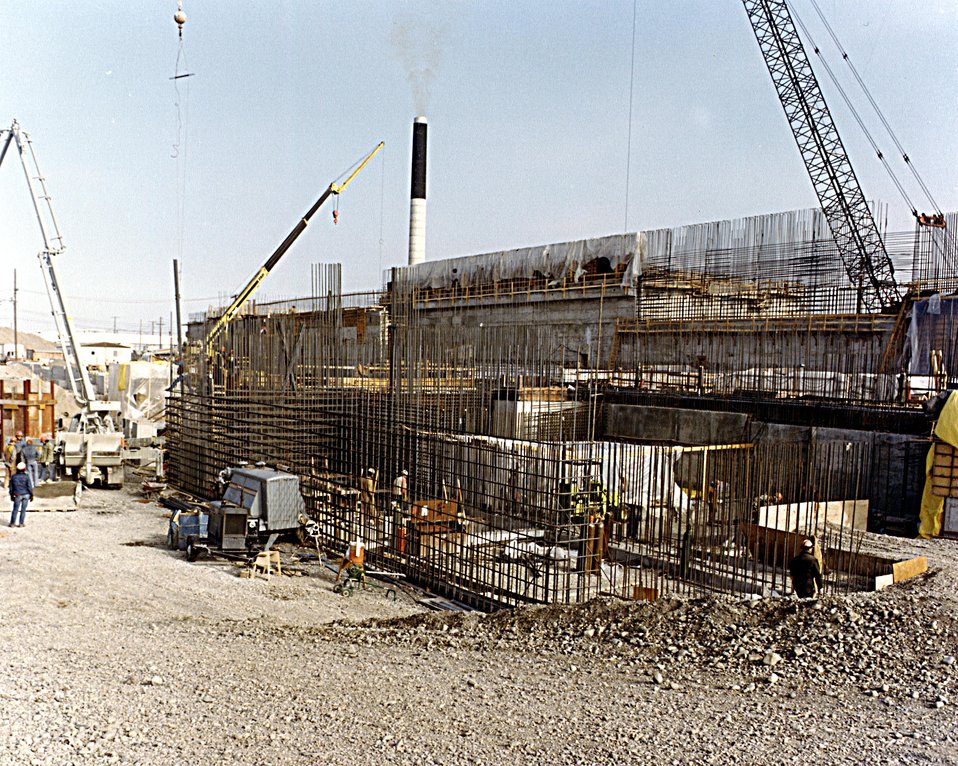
THE FLUORINEL FACILITY DURING CONSTRUCTION.

THE FLUORINEL FACILITY WILL INCLUDE AREAS FOR THE RECEIPT, HANDLING, STORAGE, AND DISSOLUTION OF SPENT REACTOR FUEL. THE DISSOLVED SOLUTION WILL BE TRANSFERRED TO EXISTING FACILITIES AT THE IDAHO FUEL PROCESSING FACILITY FOR RECOVERY OF CONTAINED URANIUM. THE FACILITY WILL PROCESS A WIDE VARIETY OF SPENT FUELS, INCLUDING NAVAL, TEST, AND RESEARCH REACTOR FUELS, TO INCREASE THE AMOUNT OF URANIUM RESOURCE AVAILABLE TO THE UNITED STATES.